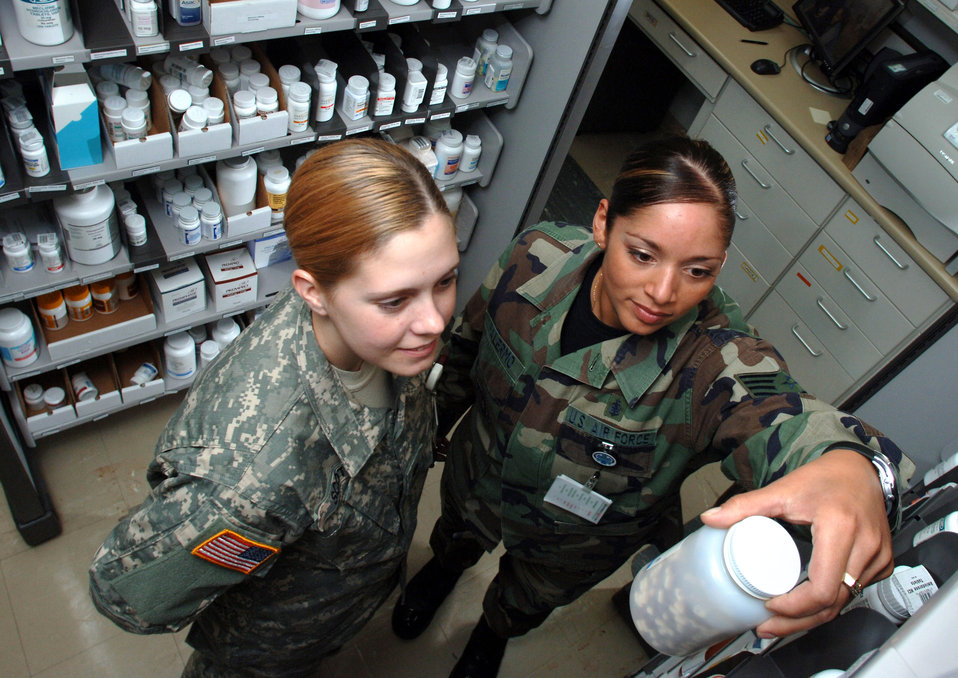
Medicine check

Staff Sgt. Guanina Palermo (right) shows Spc. Michelle Scott what to look for while searching for out-of-date medicine at the health clinic pharmacy on Kleber Kaserne, Germany, on Wednesday, April 26, 2006. Sergeant Palermo is a pharmacy technician and Specialist Scott is an x-ray technician.